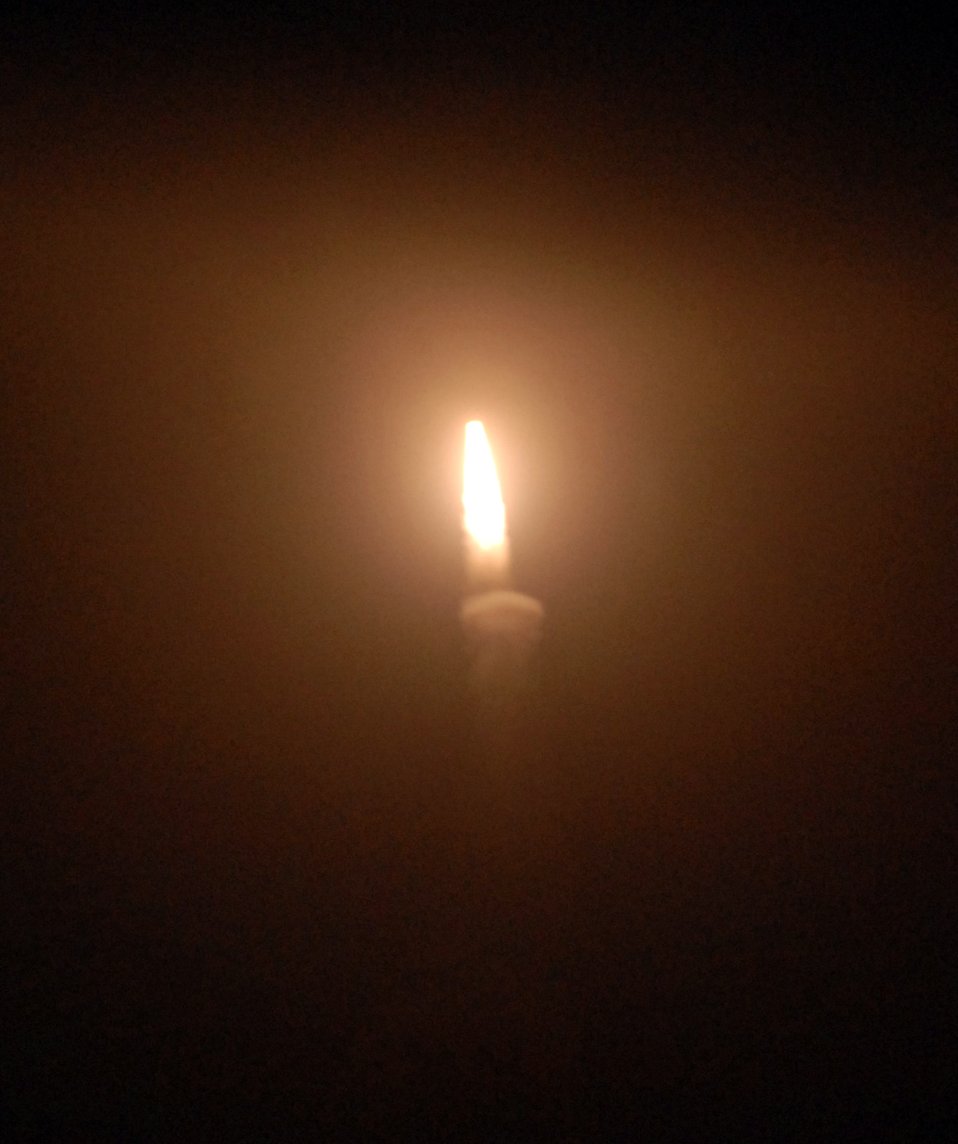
Vandenberg missile launch successful

A Minuteman III intercontinental ballistic missile configured with a National Nuclear Security Administration joint-test assembly launches May 22 from North Vandenberg Launch Facility-10 at Vandenberg Air Force Base, Calif. The launch was an operational test to determine the weapon system's reliability and accuracy. The missile's single unarmed re-entry vehicle traveled approximately 5,250 miles before hitting its pre-determined target in a broad ocean area 230 nautical miles southwest of Guam.